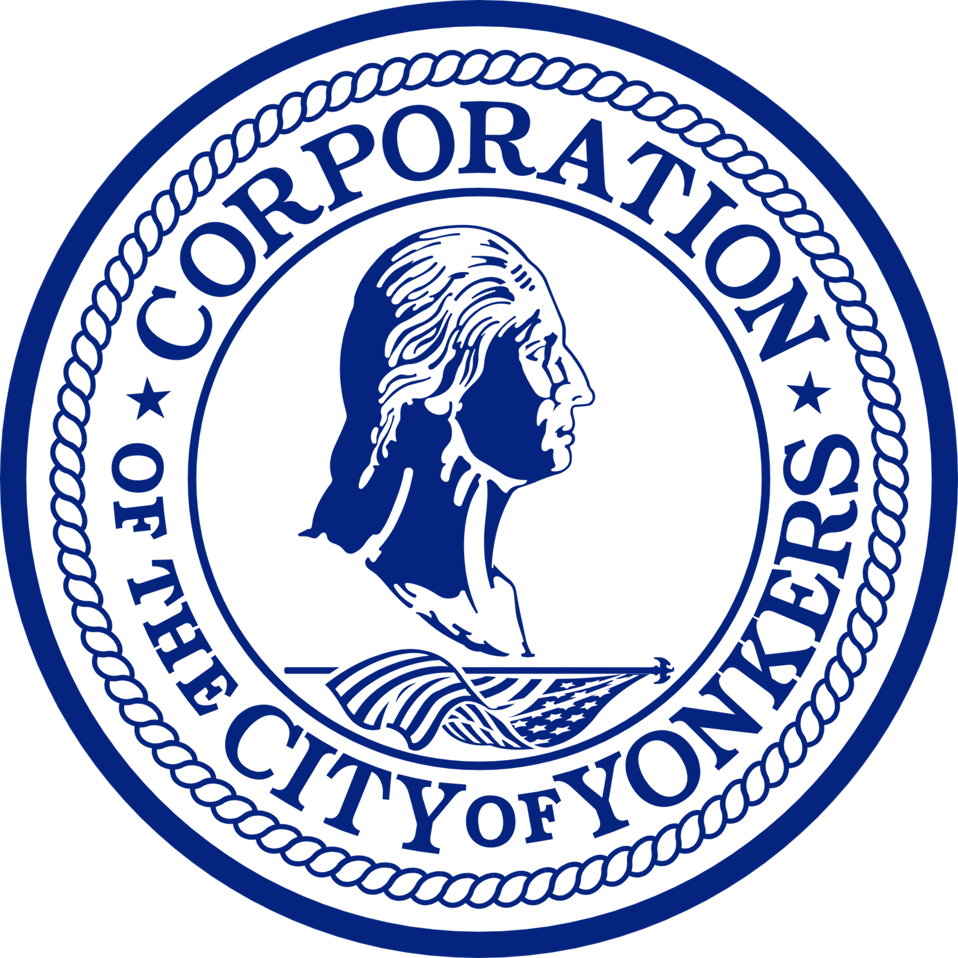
Seal of the City of en:Yonkers, New York. Image created by uploader.